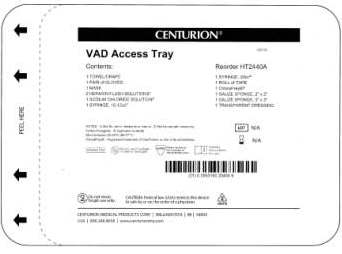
RECALLED - Convenience kits which contain bacteriostatic sodium chloride solution by American Regent

April 1, 2011 - Product Recall - Centurion Medical Products Initiates Voluntary Recall of Customized Convenience Kits (including select Central Venous Catheter, PICC Insertion, and VAD Trays) that contain American Regent’s Bacteriostatic Sodium Chloride Injection, USP, 0.9% 30 mL Multiple Dose Vials.